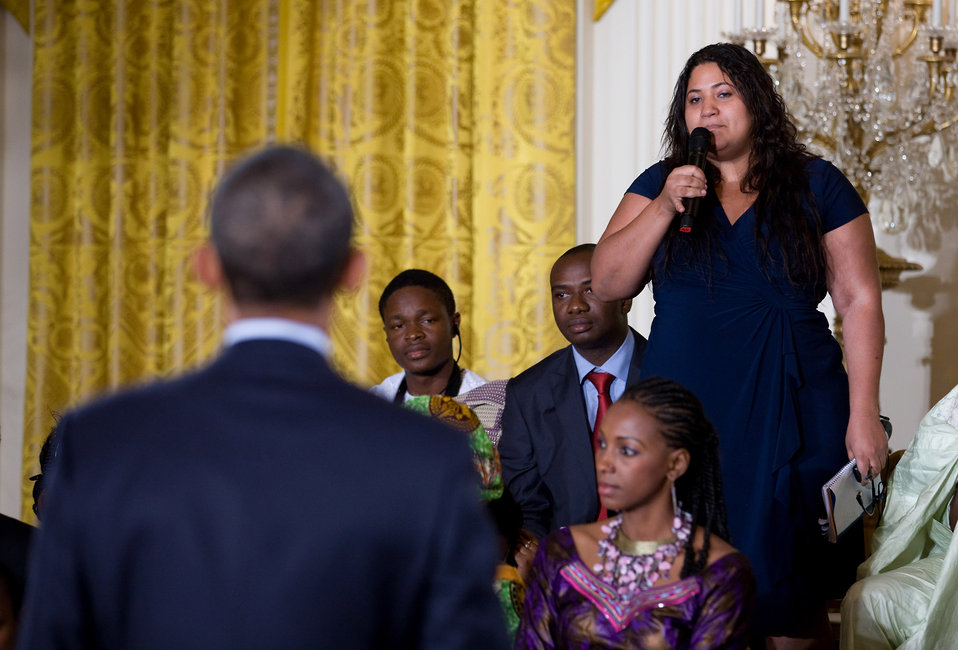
President Obama Listens to a Question from Nadia Gomes of Mozambique

President Barack Obama listens to a question from Nadja Gomes of Mozambique during a town hall-style meeting with young African leaders in the East Room of the White House in Washington, D.C., on August 3, 2010.